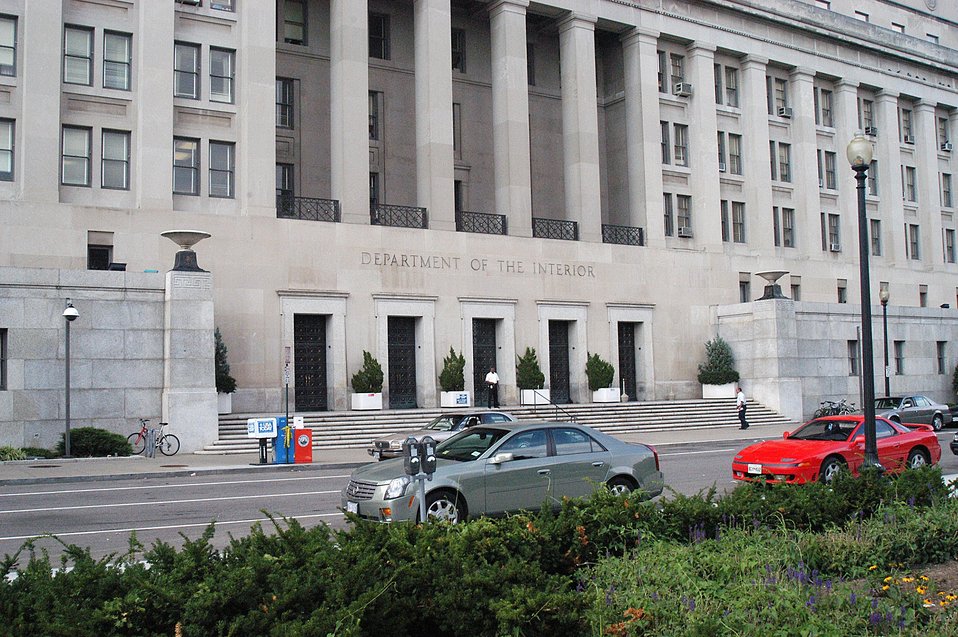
Department of the Interior building in Washington DC on 1849 C Street N.W. Photo by Tom Iraci, July 2004.